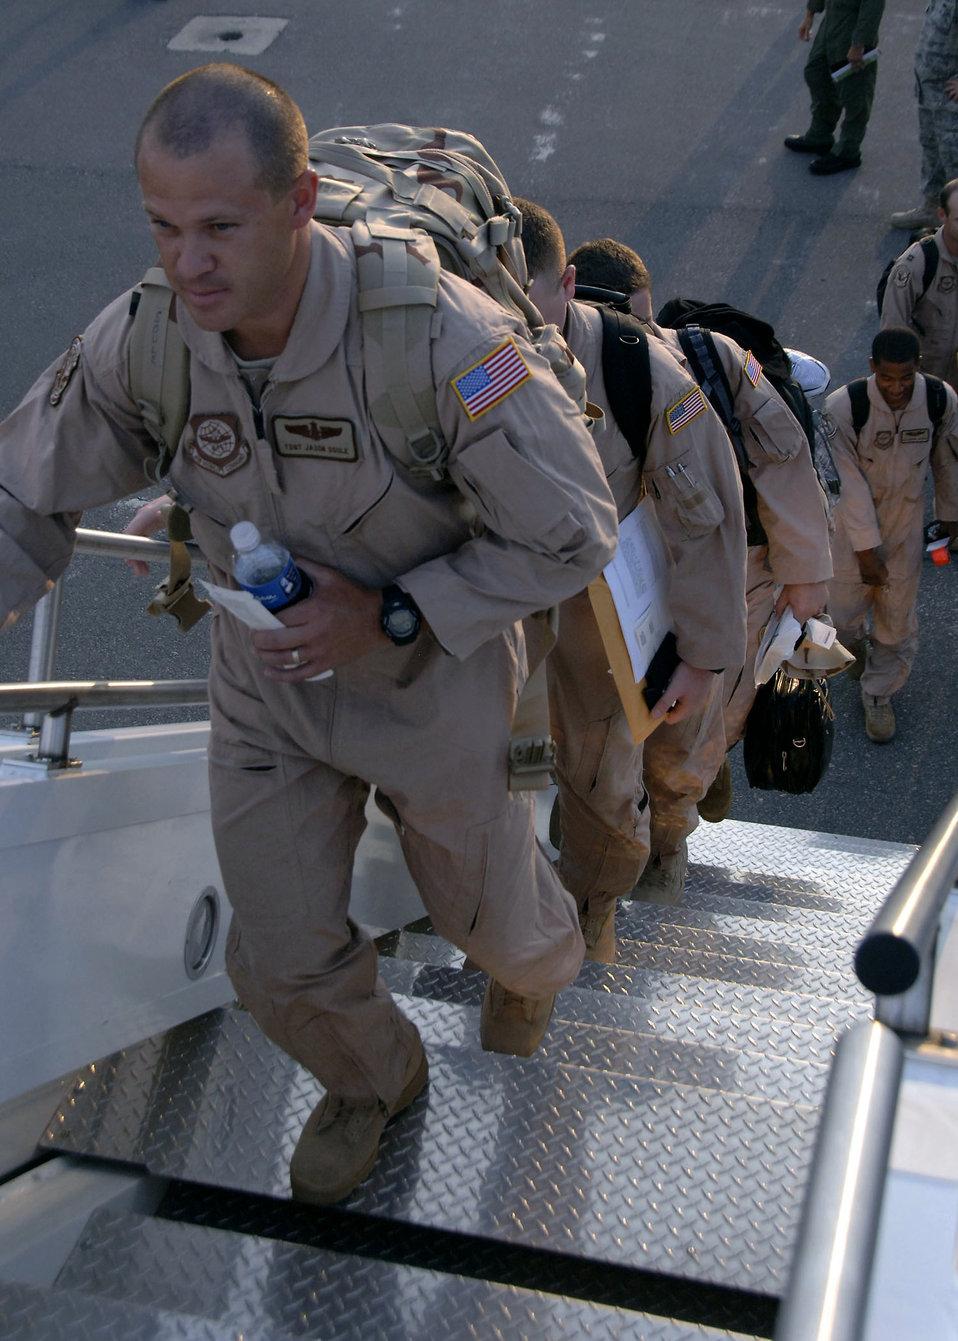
Charleston Airmen deploy to support war on terrorism

Airmen from the 15th Airlift Squadron, 437th Operations Support Squadron and 437th Maintenance Group deploy Aug. 27 from Air Force Base, S.C. Airmen are deploying to a forward-deployed location in Southwest Asia as part of operations Enduring Freedom and Iraqi Freedom.